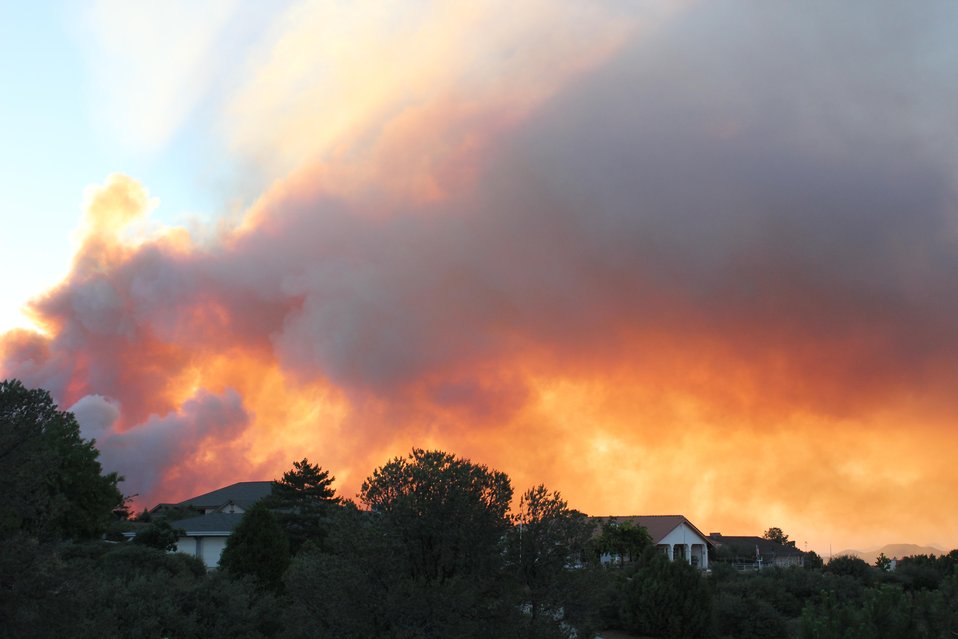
The Doce Fire (pronounced 'Dough-see') is located approximately 8 miles northwest of Prescott, AZ near Granite Mountain Recreation Area began on Jun. 18, 2013 by human interference. The fire has consumed approximately 6, 732 acres.